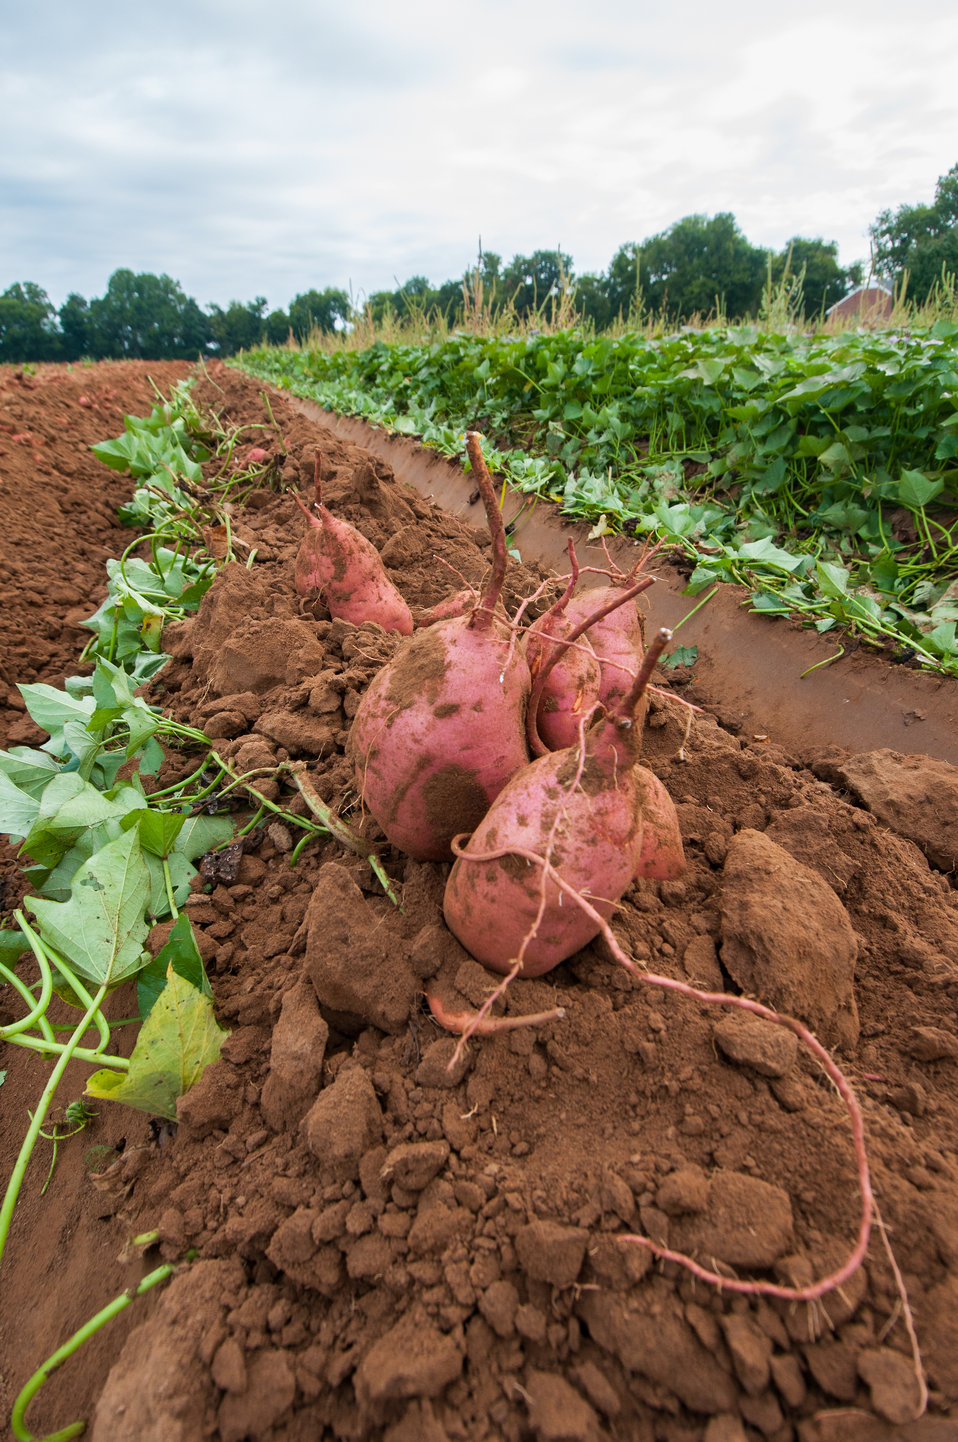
The sweet potatoes harvest at Kirby Farms in Mechanicsville, VA on Friday, Sept. 20, 2013. Kirby Farms devotes 200 acres of the farm to eggplant, spinach, beets, tomato, jalapeno peppers, melons and a variety of greens. Soybeans and small grain are grown on the remaining 300 acres. The fertile Virginia soil and their management practices, allows Kirby Farms to double and triple crop fields with rotational crop selection. Wholesalers, who buy from this farm, sell the produce to major supermarkets in the Mid-Atlantic region, from North Carolina to Maryland. Restaurateurs in the local area prepare and serve their harvest to patrons in the Greater Richmond Region.